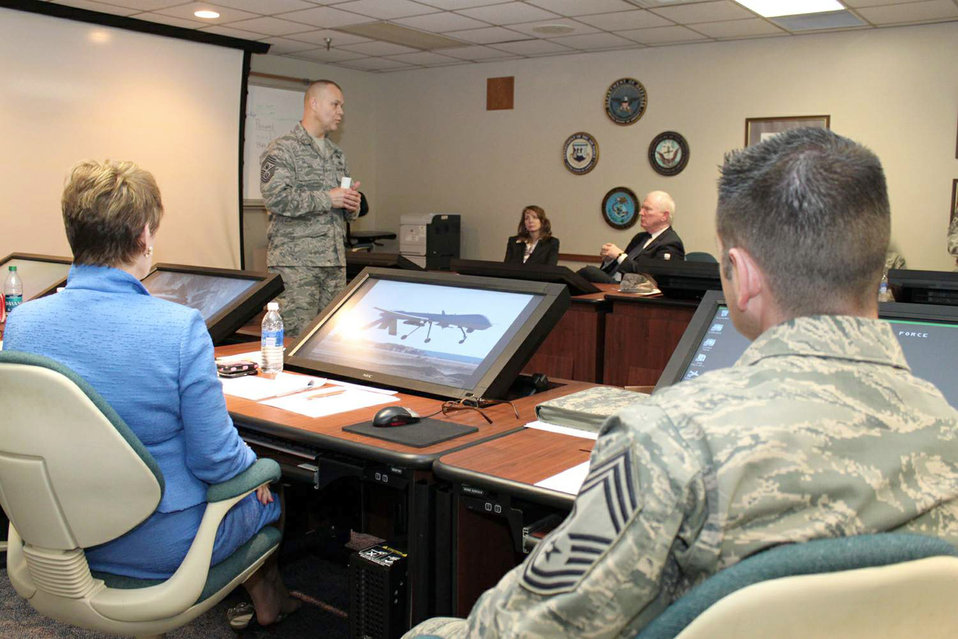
Enlisted development

Chief Master Sgt. of the Air Force James A. Roy discusses enlisted force development with the nuclear weapons career field enlisted developmental team March 31, 2011, at Randolph Air Force Base, Texas.